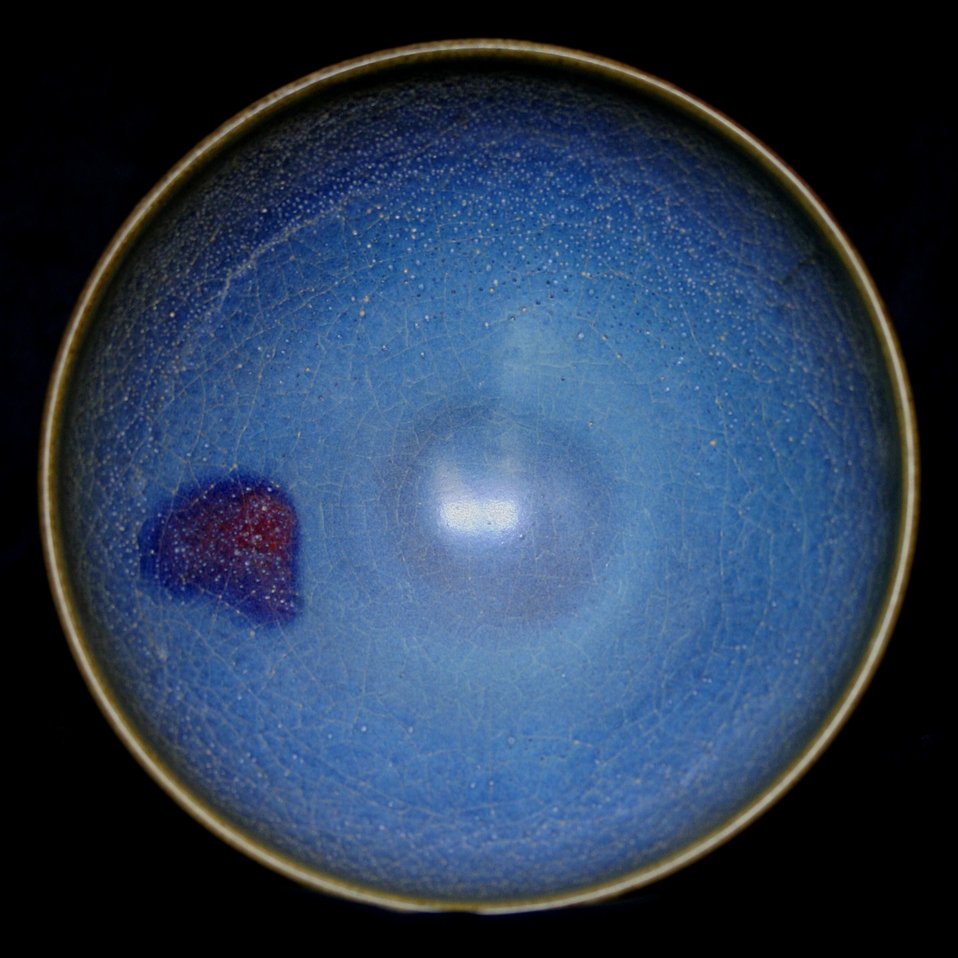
Yuan period Jun bowl